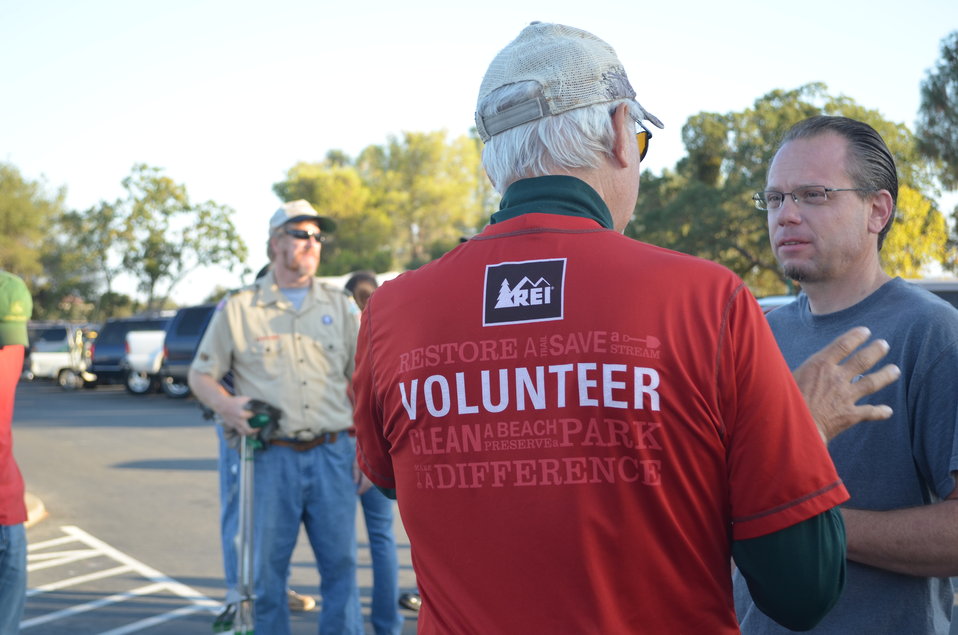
The shirt on his back (National Public Lands Day 2012)

Two New Hogan Lake volunteers share stories of the outdoors during National Public Lands Day, Sept. 29, 2012. U.S. Army Corps of Engineers park staff and an army of volunteers celebrated the day with park improvement projects, camaraderie and food.